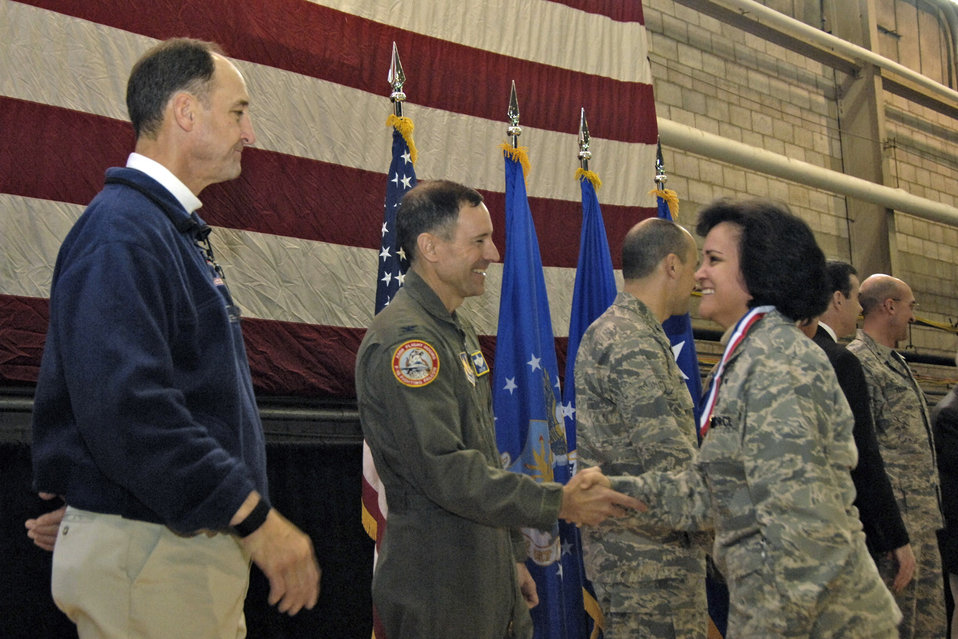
Hanscom heroes welcomed home

Maj. Elisa Valenzuela (right) is welcomed home by Col. David Orr (second from left)and former New England Patriots quarterback Steve Grogan (far left) during the Heroes' Homecoming celebration Dec. 12 at Hanscom Air Force Base, Mass. The event welcomed home more than 45 base Airmen who deployed during the past six months. Colonel Orr is the 66th Air Base Wing commander.